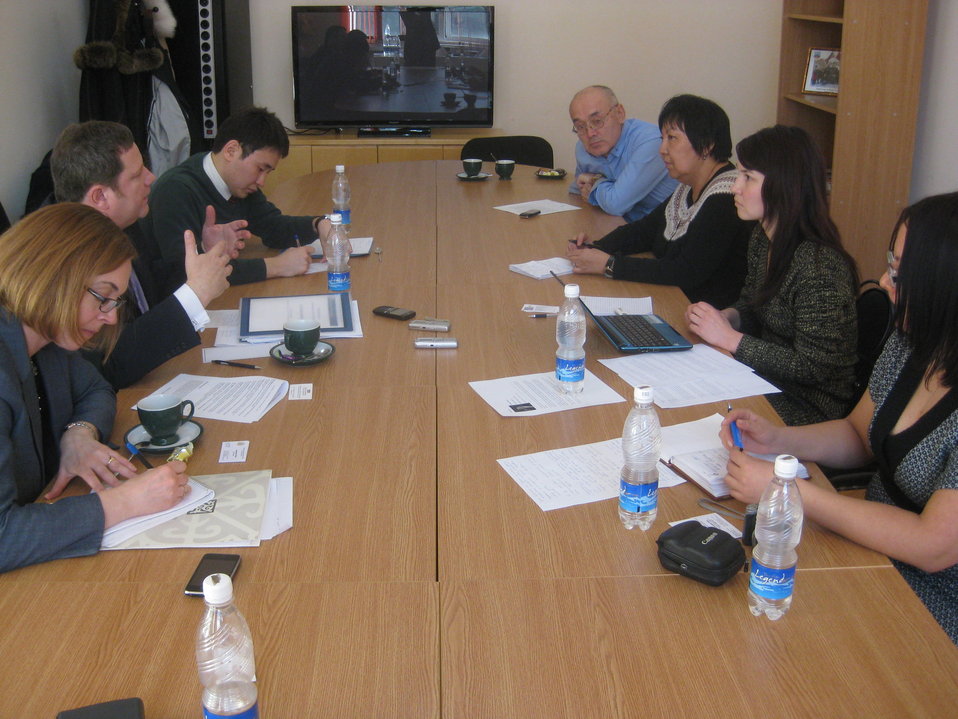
Assistant Secretary Hammer Meets With Kyrgyz Journalists

Assistant Secretary of State for Public Affairs Mike Hammer meets with local journalists at the American Corner in Bishkek, Kyrgyzstan, on March 1, 2013.